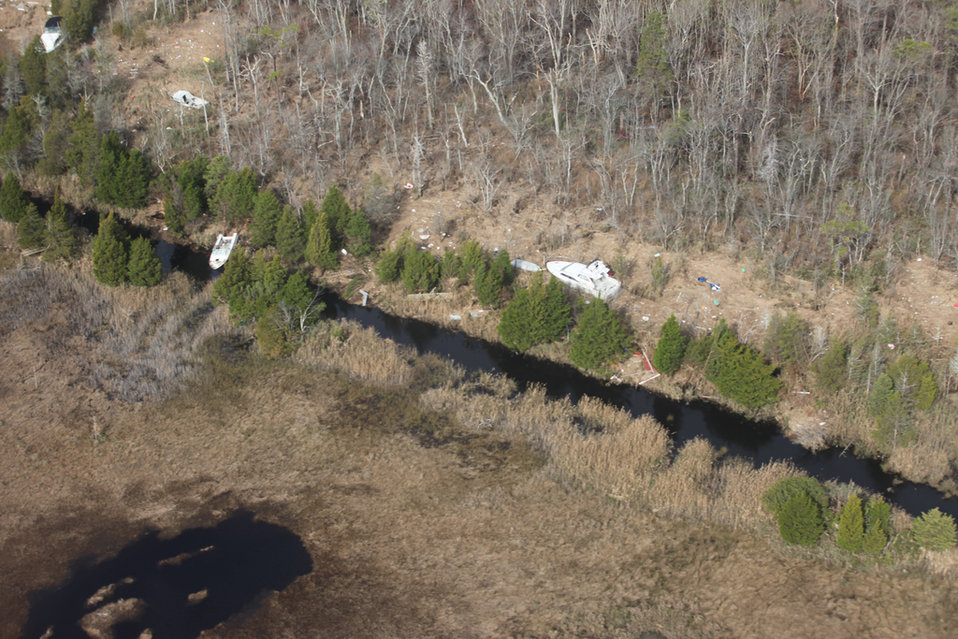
Boats washed ashore at Forsythe Refuge

Aerial photo of E.B. Forsythe National Wildlife Refuge in New Jersey taken on 11/2/12 shows boats washed ashore by Hurricane Sandy.